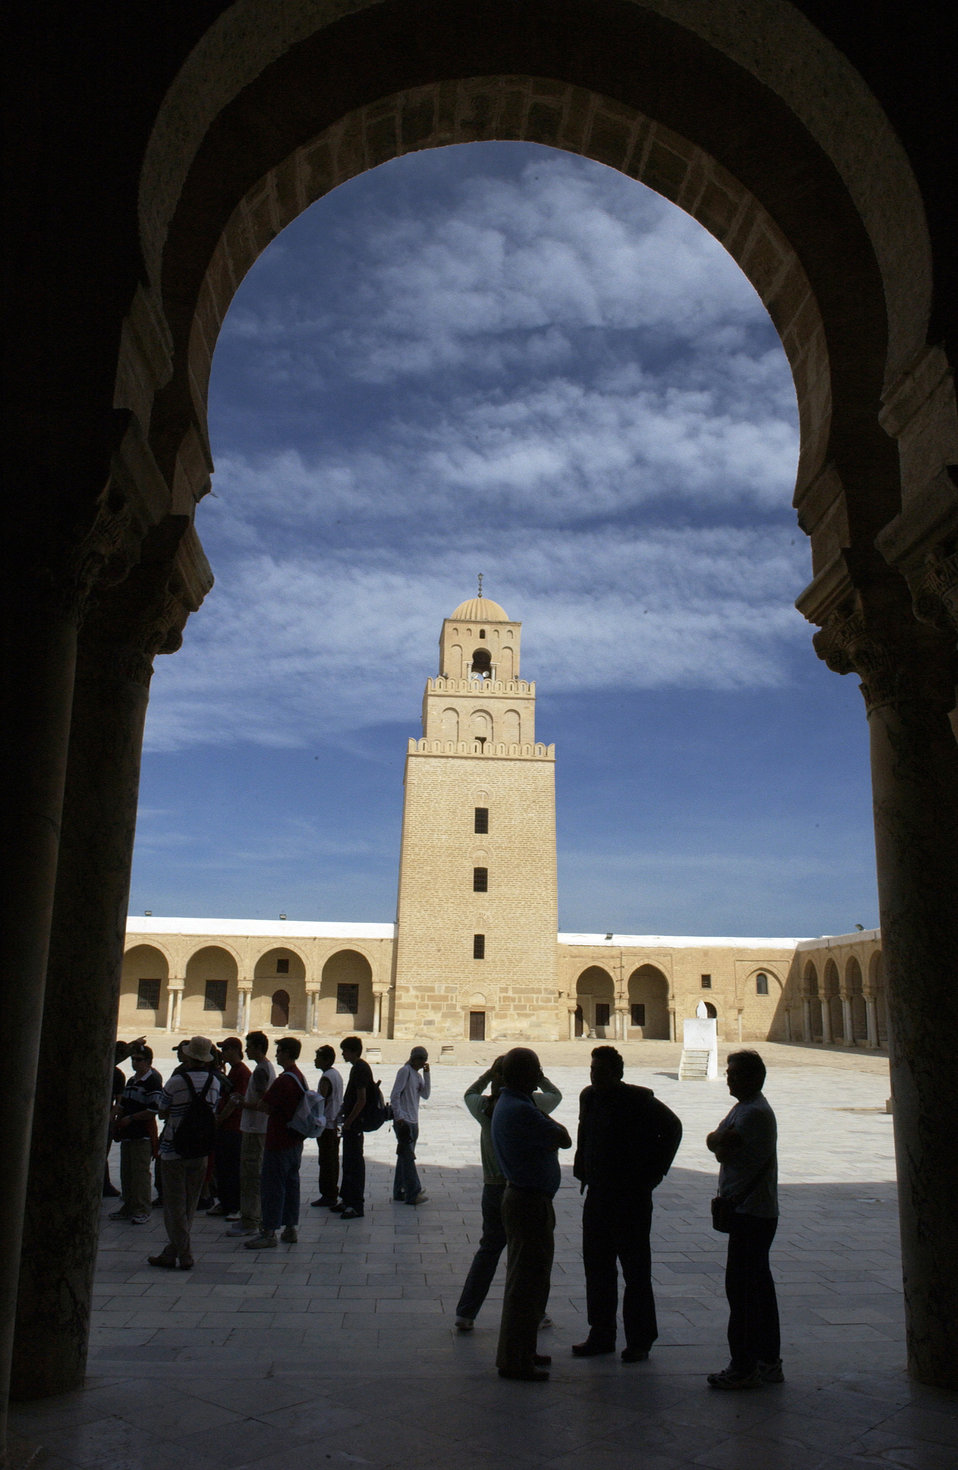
MEDLite 2006

Air Force medical specialists participating in Exercise MEDLite 2006 in Tunisia visit the Great Mosque of Kairouan as part of a cultural exchange day Sunday, April 2, 2006. MEDLite 2006, held at Kharrouba Air Base, provides the opportunity for Air Force medical specialists to exchange medical skills, techniques and procedures with Tunisian military medical personnel.